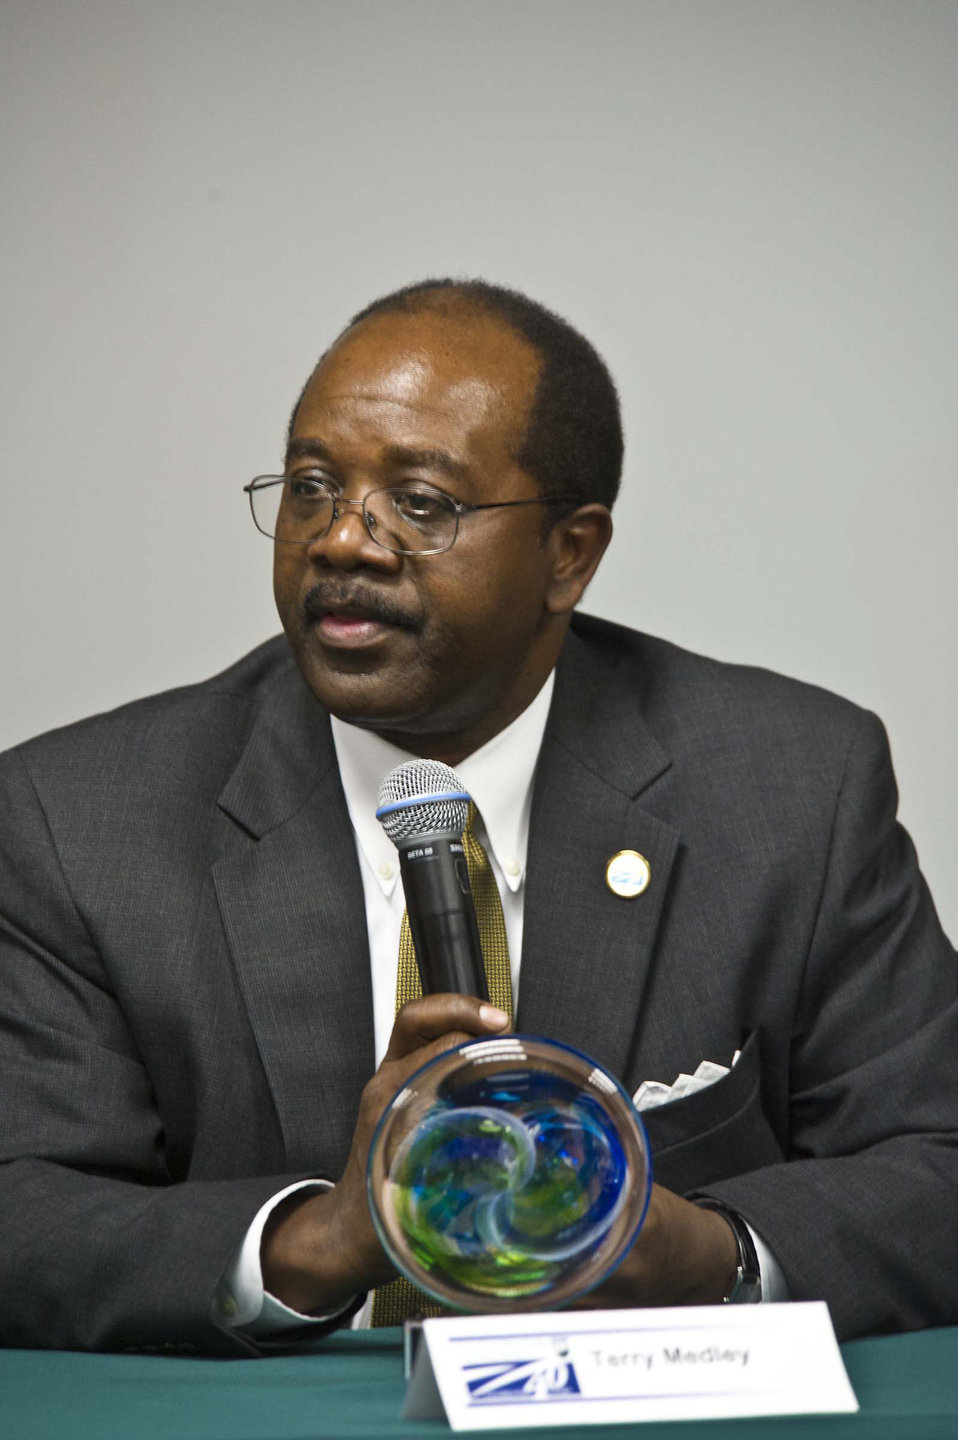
Former U.S. Department of Agriculture (USDA) Animal and Plant Health Inspection Service (APHIS) Administrator Terry Medley (1996-1998) participates in a panel disucssion at the 40th anniversary of APHIS on May 16, 2012.